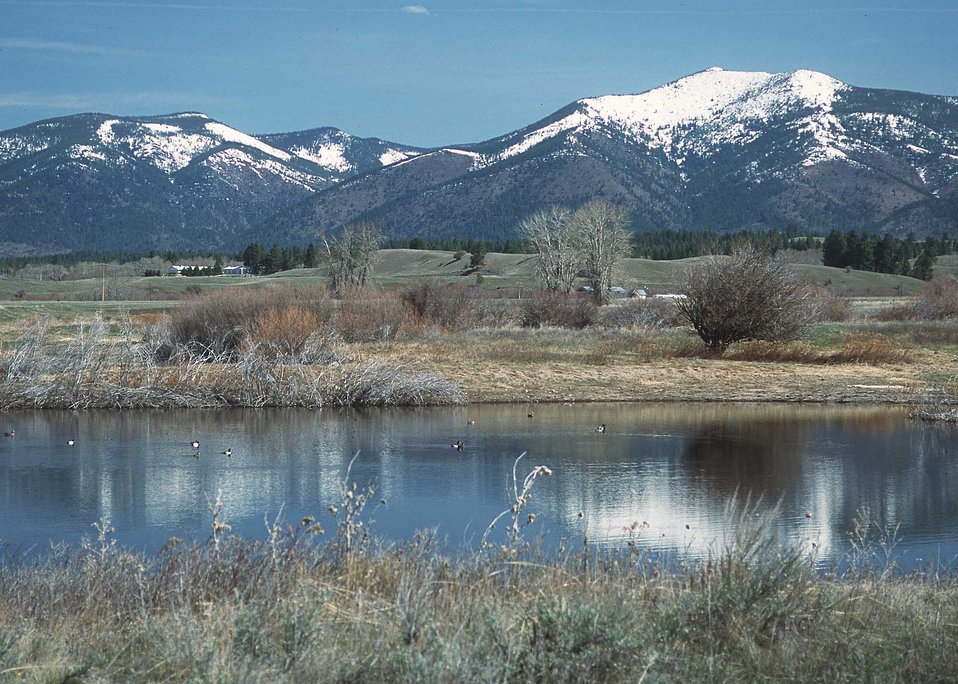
Pond in Powell County, MT.